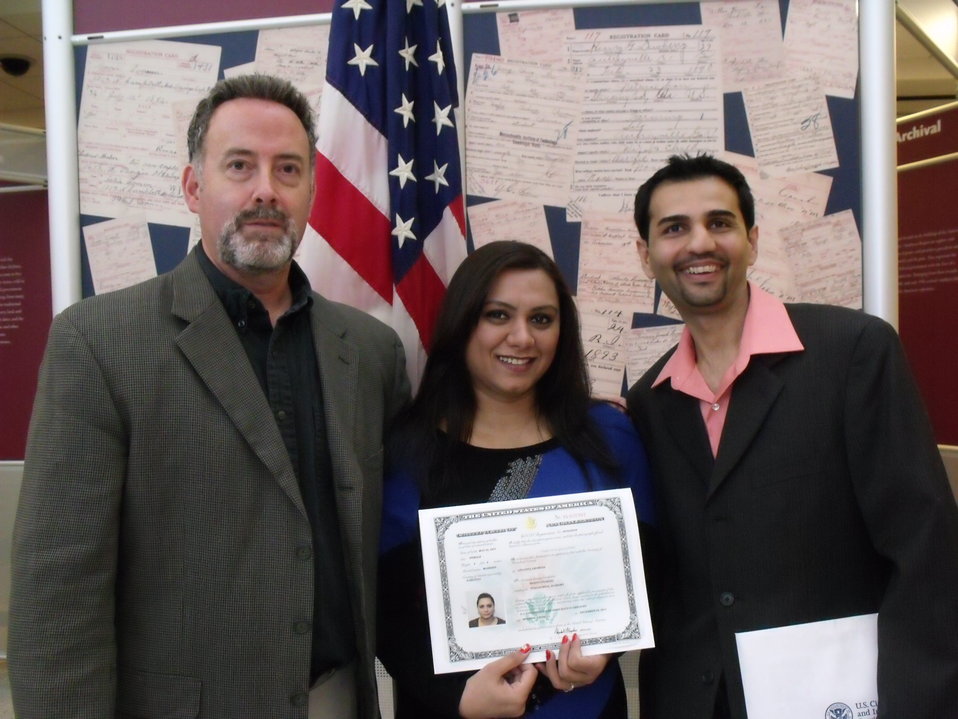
New Citizens